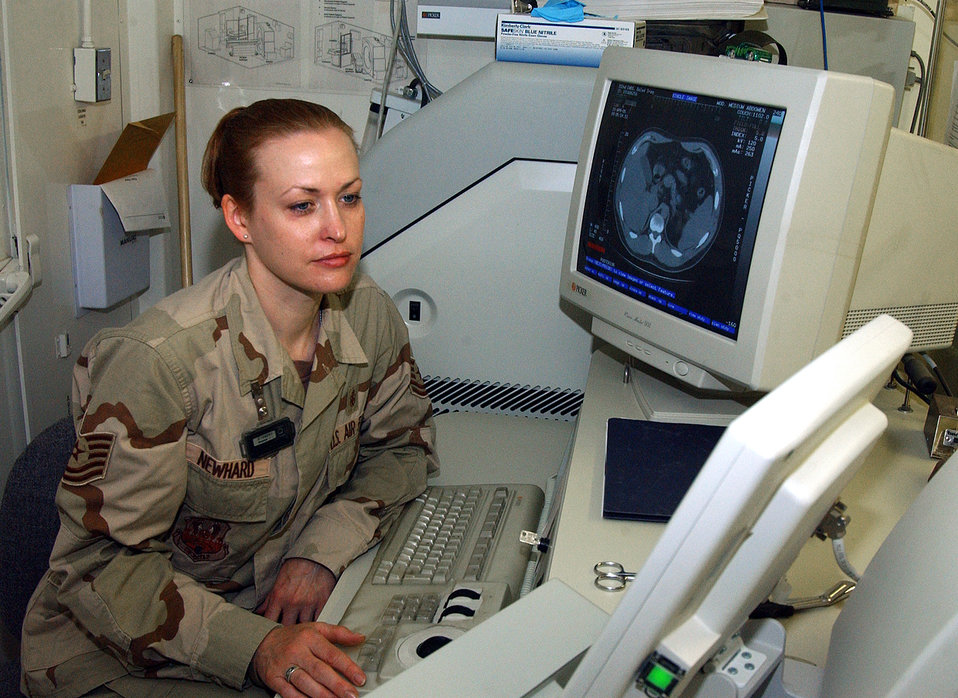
Nothing inside hidden from radiology flight

BALAD AIR BASE, Iraq -- Tech. Sgt. BJ Newhard plots an exam for a CT scan here. She is noncommissioned officer in charge of the 332nd Expeditionary Medical Support Squadron's radiology flight and is deployed from Lackland Air Force Base, Texas.